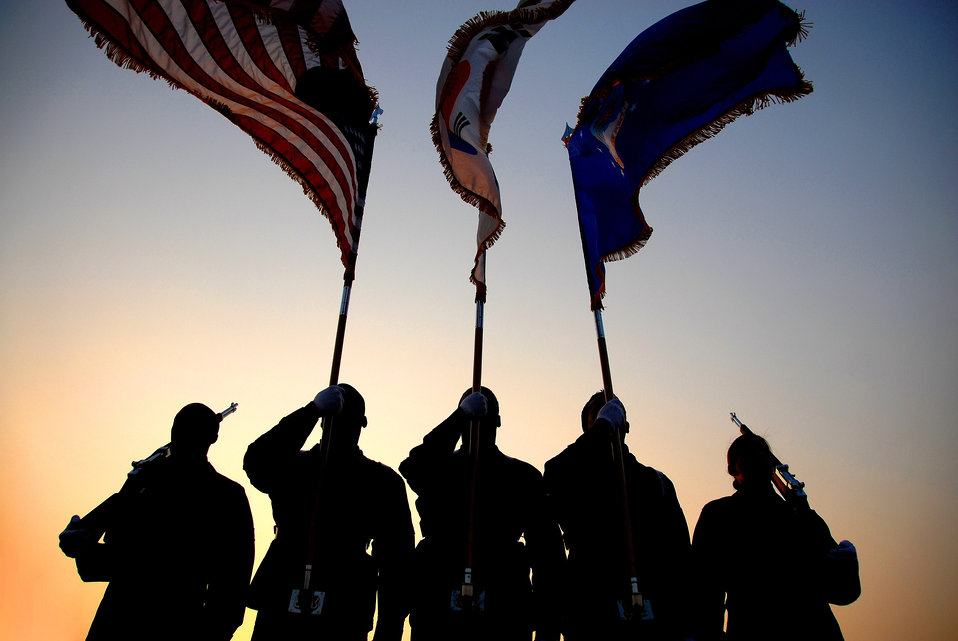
Presenting the colors

Members of the honor guard team at Osan Air Base, South Korea, practice cordon procedures Nov. 7 prior to the departure of Adm. Timothy J. Keating, commander of U.S. Pacific Command. Admiral Keating was visiting the base for a cultural tour.